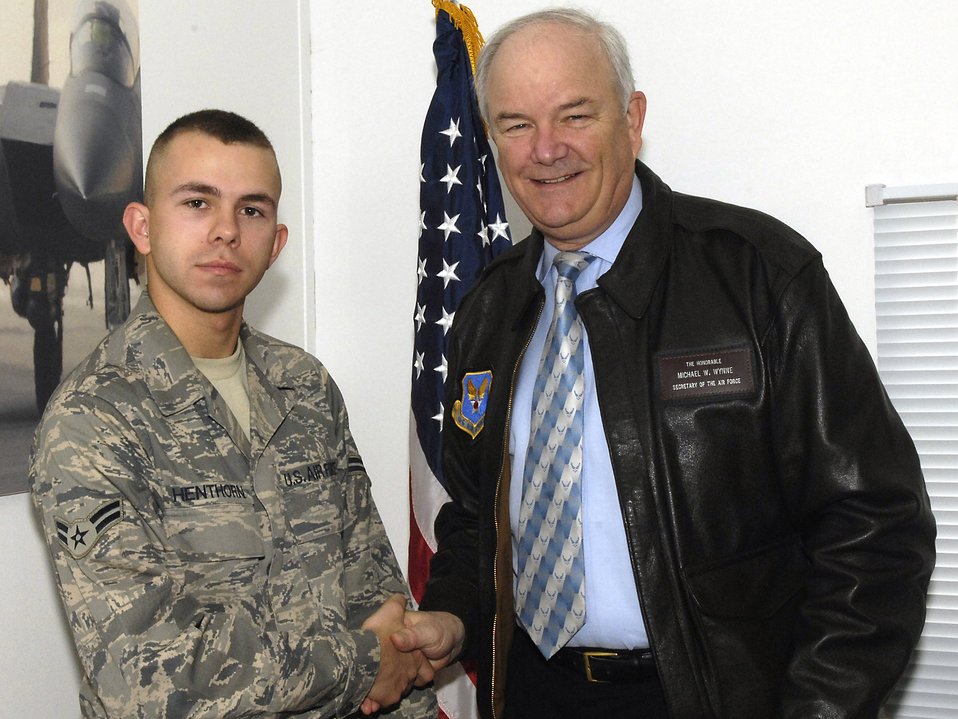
Operation Enduring Freedom

Airman 1st Class Roger Henthorn was honored by Secretary of the Air Force Michael W. Wynne Feb. 5. at the Combined Air and Space Operations Center in Southwest Asia with a personal coin.